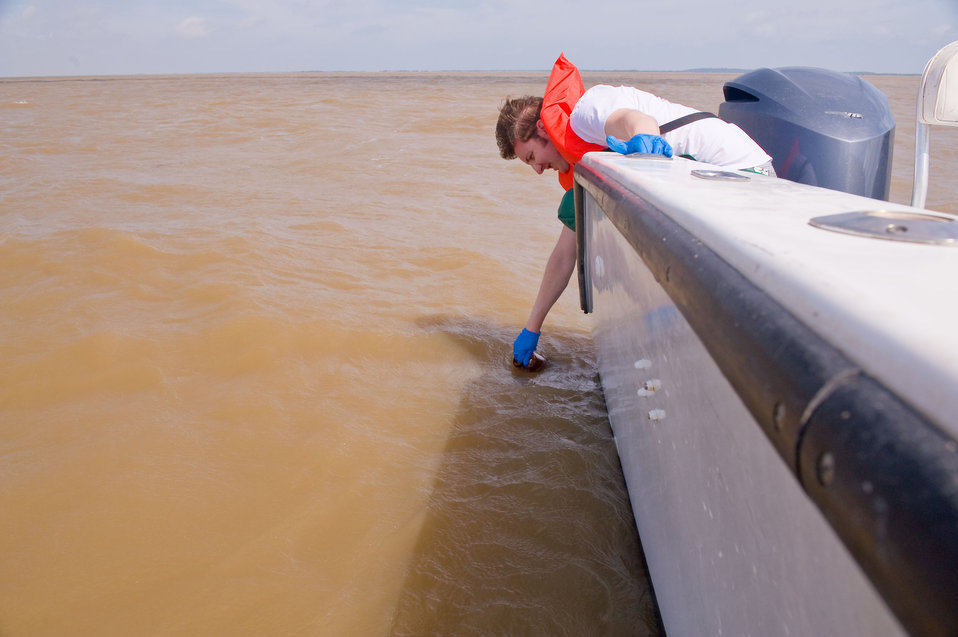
Water sampling in the Gulf.

May 12, 2010. Out of Cocodrie, La. EPA collects water samples to assess potential oil spill impacts on aquatic life near shore. The water samples are being analyzed for 22 chemicals that are components of oil.
In this photo: Jeff Bryniarski, EPA Contractor.